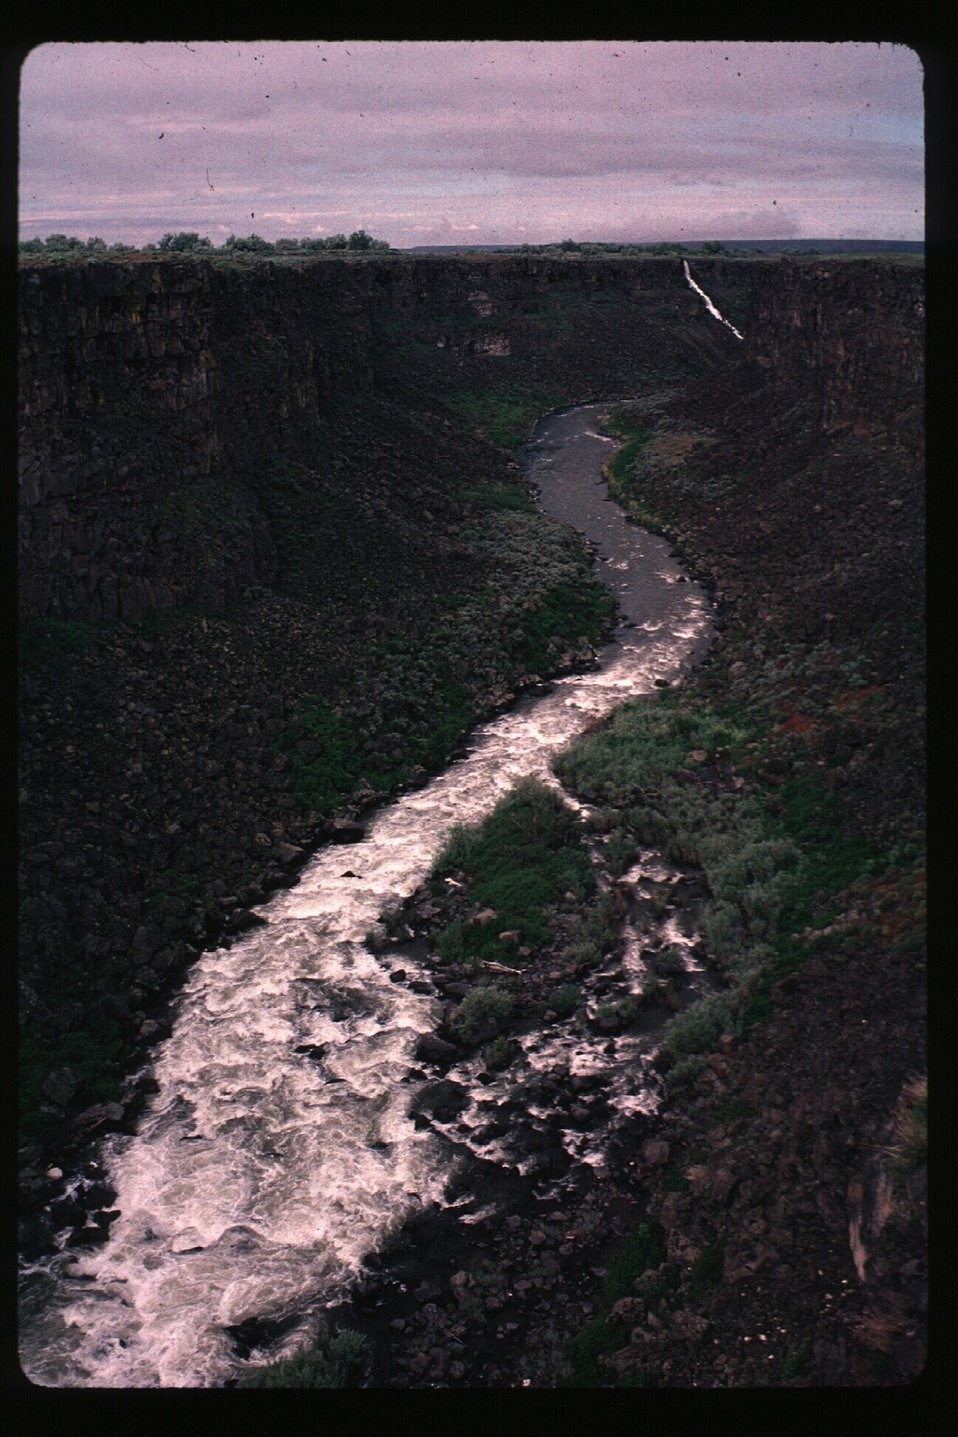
Water falls Rapids Recreation Scenic Snake River Jarbidge Field Office LSRD Lower Snake River District